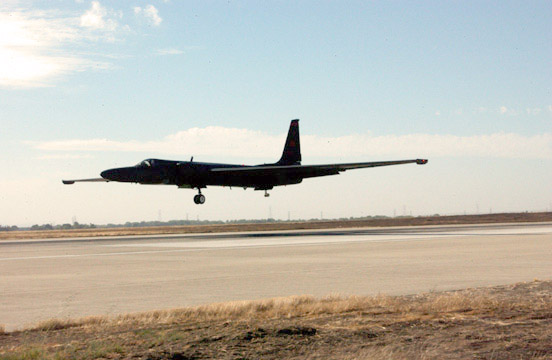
U-2

BEALE AIR FORCE BASE, Calif. -- A U-2